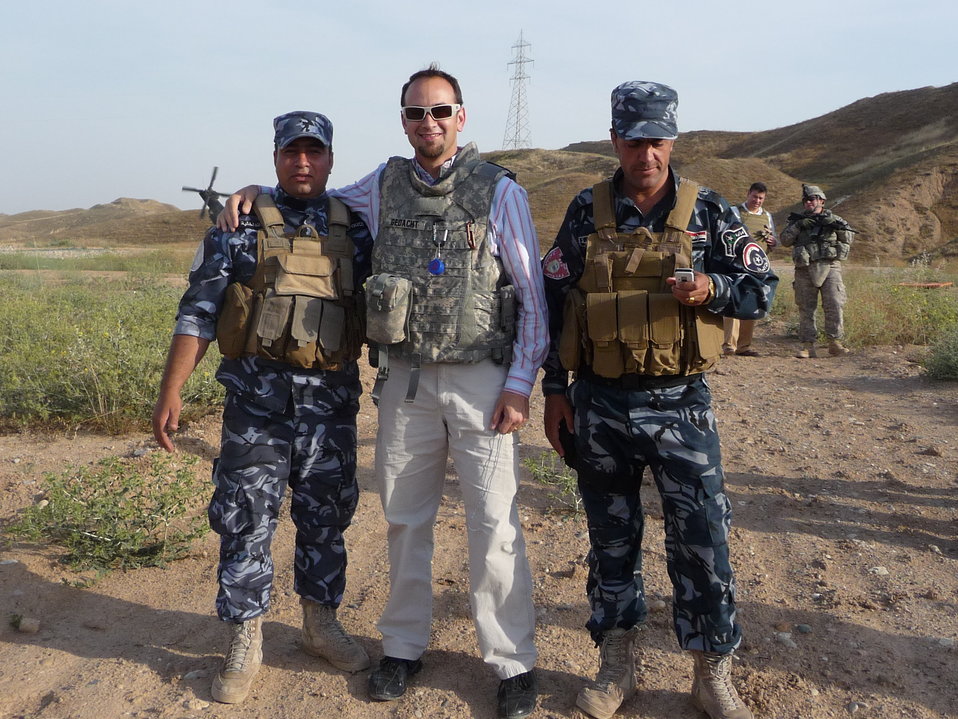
Dan Gedacht Speaks With Peshmerga Forces

Dan Gedacht (U.S. Embassy Baghdad) speaks with peshmerga forces at Combined Checkpoint in Kirkuk, Iraq, 2010.